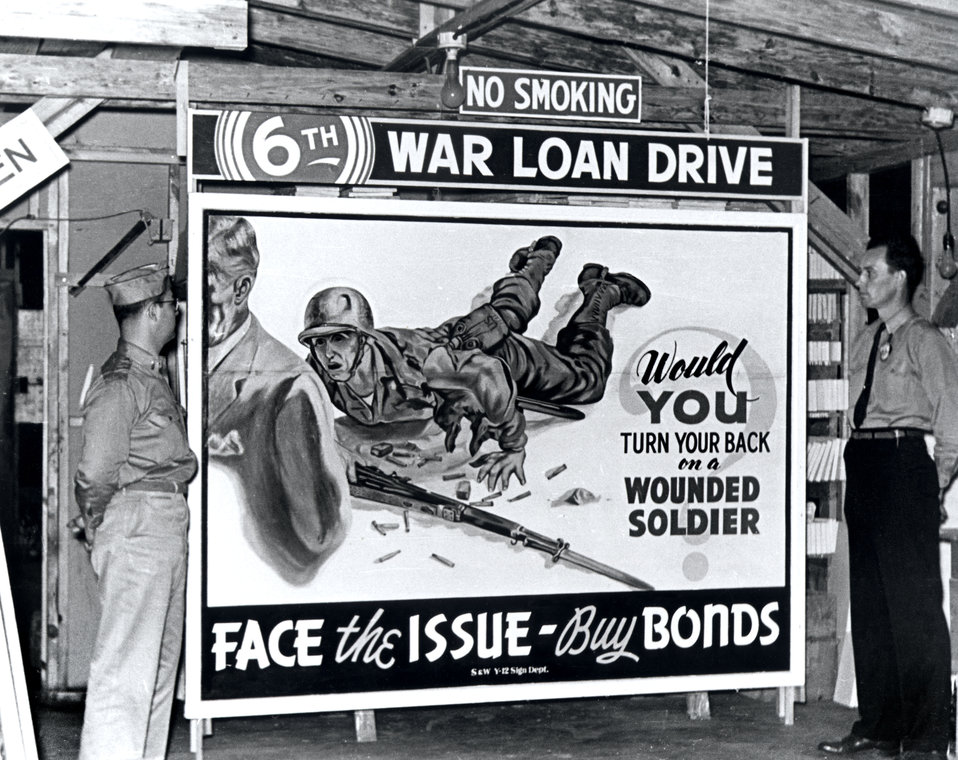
Sign Billboard War Bonds Oak Ridge

Roll 330-44 DOE photo Ed Westcott 10/13/44
Oak Ridge Tennessee